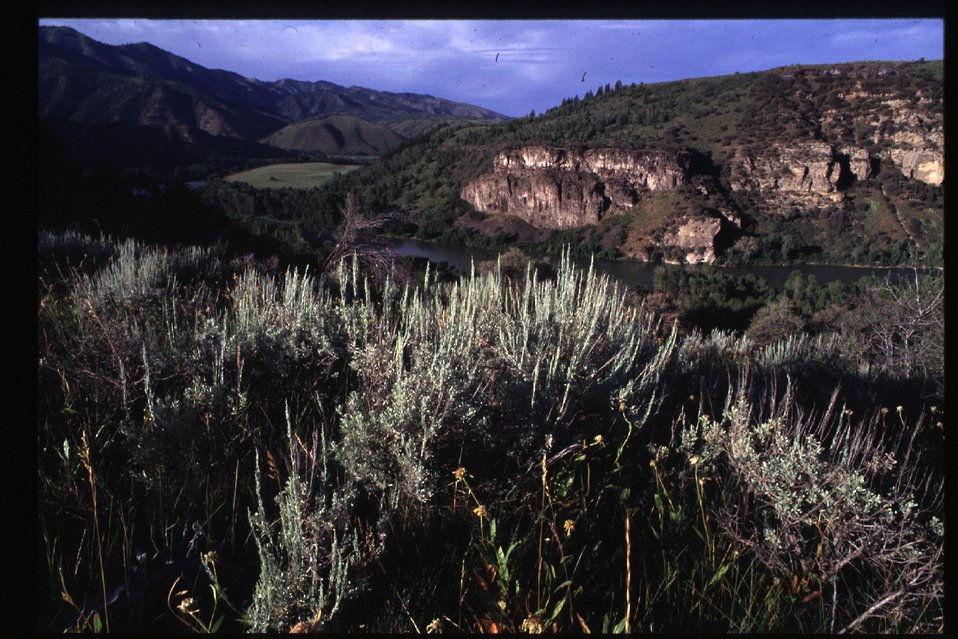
South Fork of Snake River Idaho Falls Field Office USRD Upper Snake River District